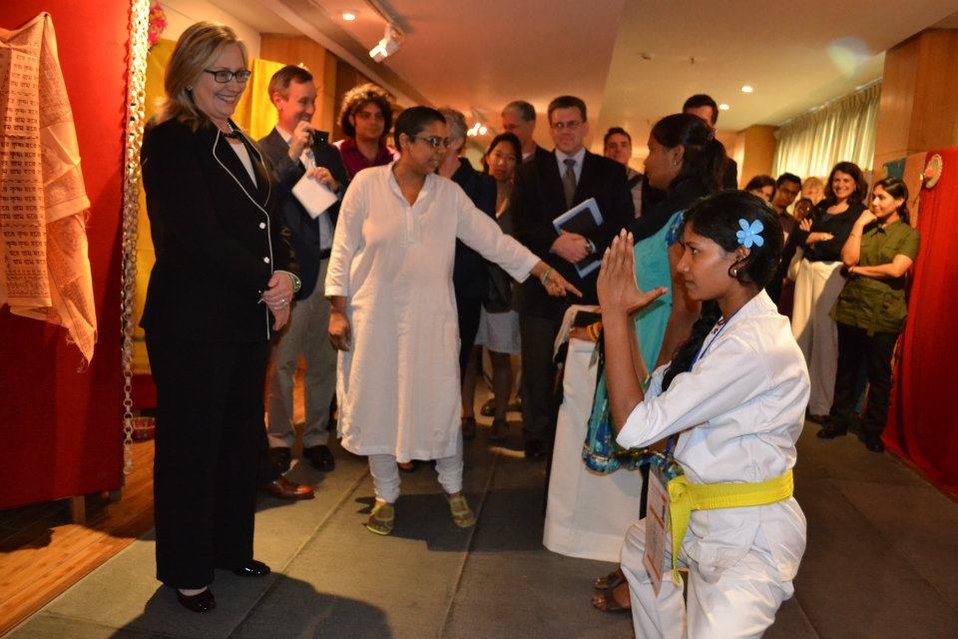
Secretary Clinton Attends the Anti-Trafficking Champions Event

U.S. Secretary of State Hillary Rodham Clinton attends the Anti-Trafficking Champions Event in Kolkata, India, on May 6, 2012.